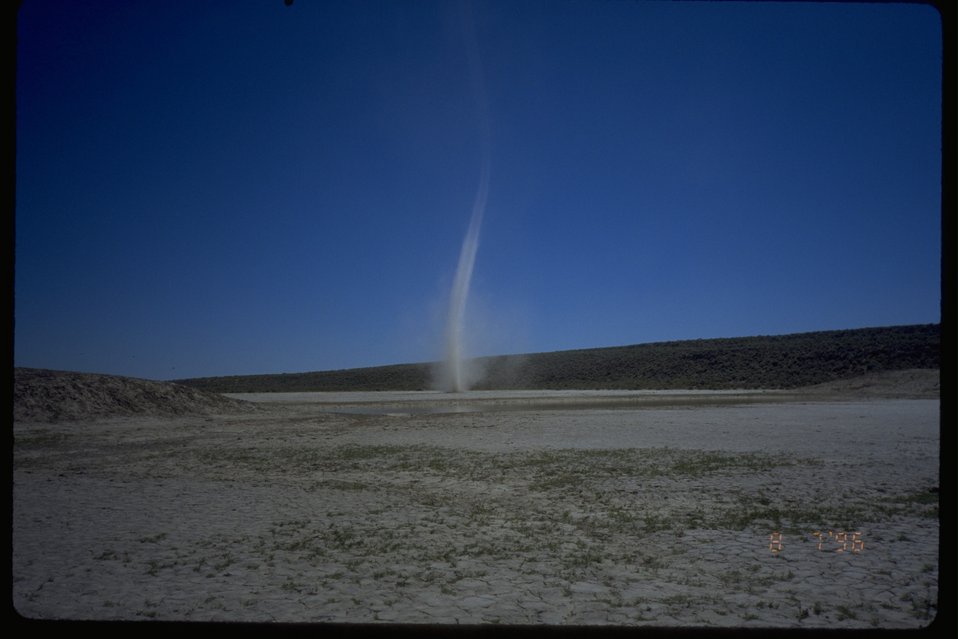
Dust devil in a dry lake bed.